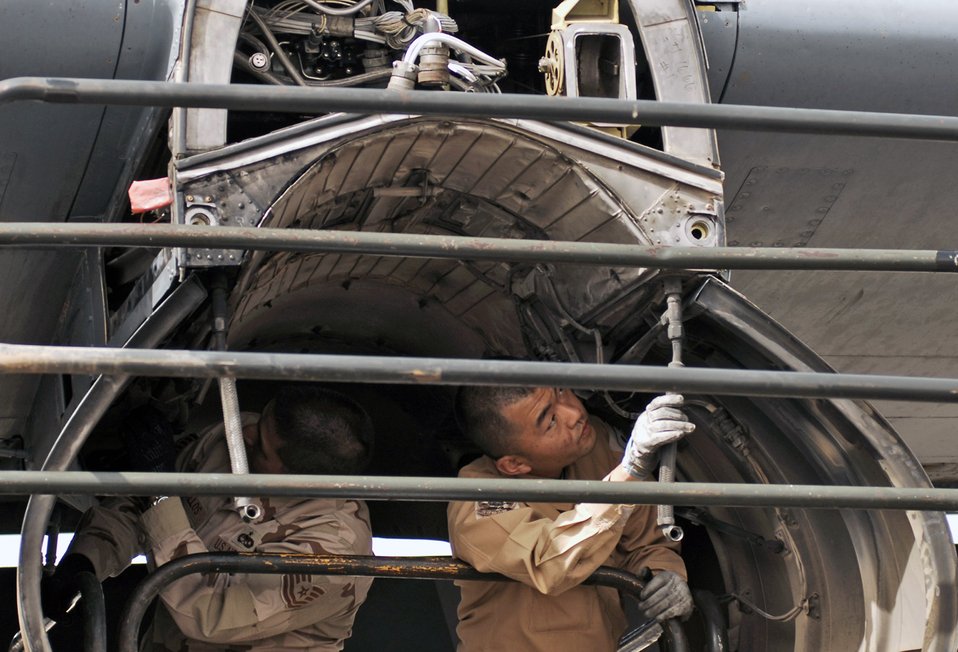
Coalition maintainers keep C-130 in the fight

Tech. Sgt. Porfirio Bustillos (left) and Staff Sgt. Kouichi Tsunoda inspect an engine insulation blanket for cracks, holes and deterioration on a C-130 Hercules March 21 at a Southwest Asian air base. Airmen from the U.S., Japanese Air Self-Defense Force and South Korean air force's 58th Airlift Wing participated in a coalition maintenance exchange program allowing maintainers to sharpen their skills, exchange ideas, and promote closer relations among coalition air forces supporting the war on terrorism. Sergeant Bustillos is a maintainer deployed to the 386th Expeditionary Aircraft Maintenance Squadron, and Sergeant Tsunoda is a maintainer from the Japan Air Self-Defense Force Iraq Reconstruction Support Airlift Wing.